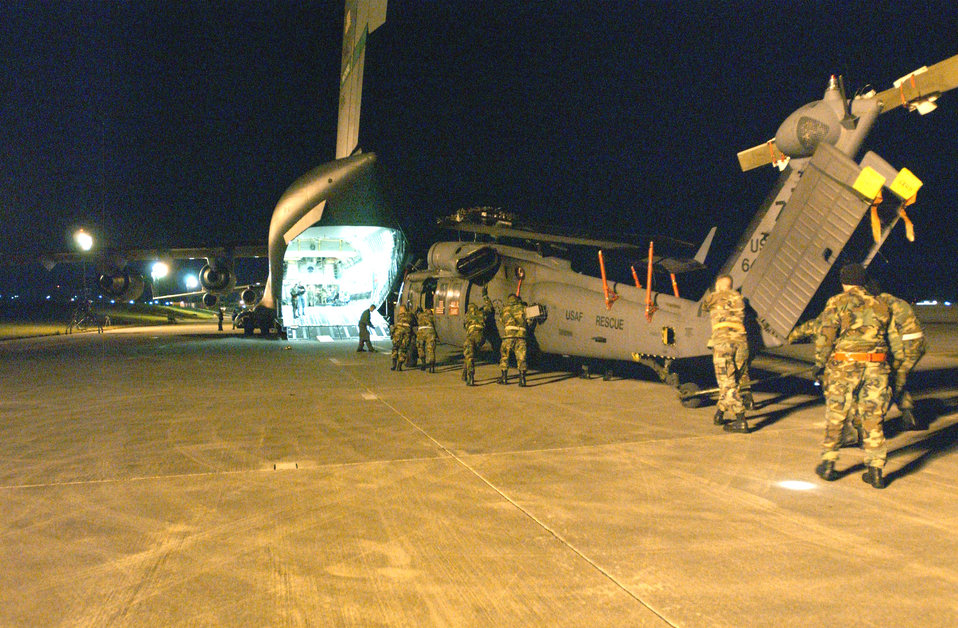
Pave Hawks catch lift to Sri Lanka

KADENA AIR BASE, Japan -- Airmen here push a